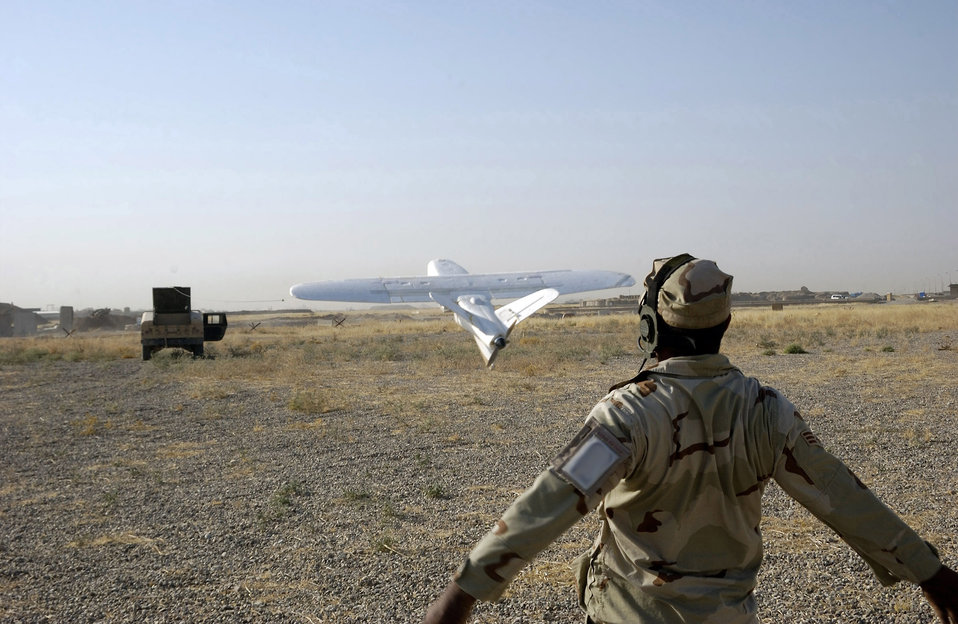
Launching surveillance

KIRKUK AIR BASE, Iraq -- Senior Airman Jonathan Hobbs launches a Desert Hawk surveillance plane from the back of his Humvee here. The force protection airborne surveillance system flies more than 30 missions each month recording still and video images for intelligence purposes. Airman Hobbs is an FPASS administrator and is deployed from Moody Air Force Base, Ga.